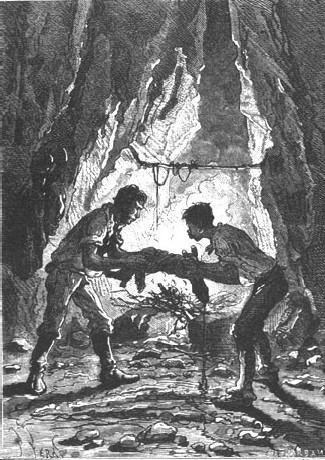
An illustration from Jules Verne's novel 'The Mysterious Island' (1873-74) drawn by Jules Férat. Polski: Ilustracja powieści Juliusza Verne'a 'Tajemnicza wyspa' (tytuł przekładany także jako: Wyspa tajemnicza, 1873-74) autorstwa Julesa Férata. Français : Jules Verne: 'L’Île mystérieuse' (1873-74), dessins par Jules Férat. Orginal description from the book: Français : Nab et Pencroff préparèrent des grillades…